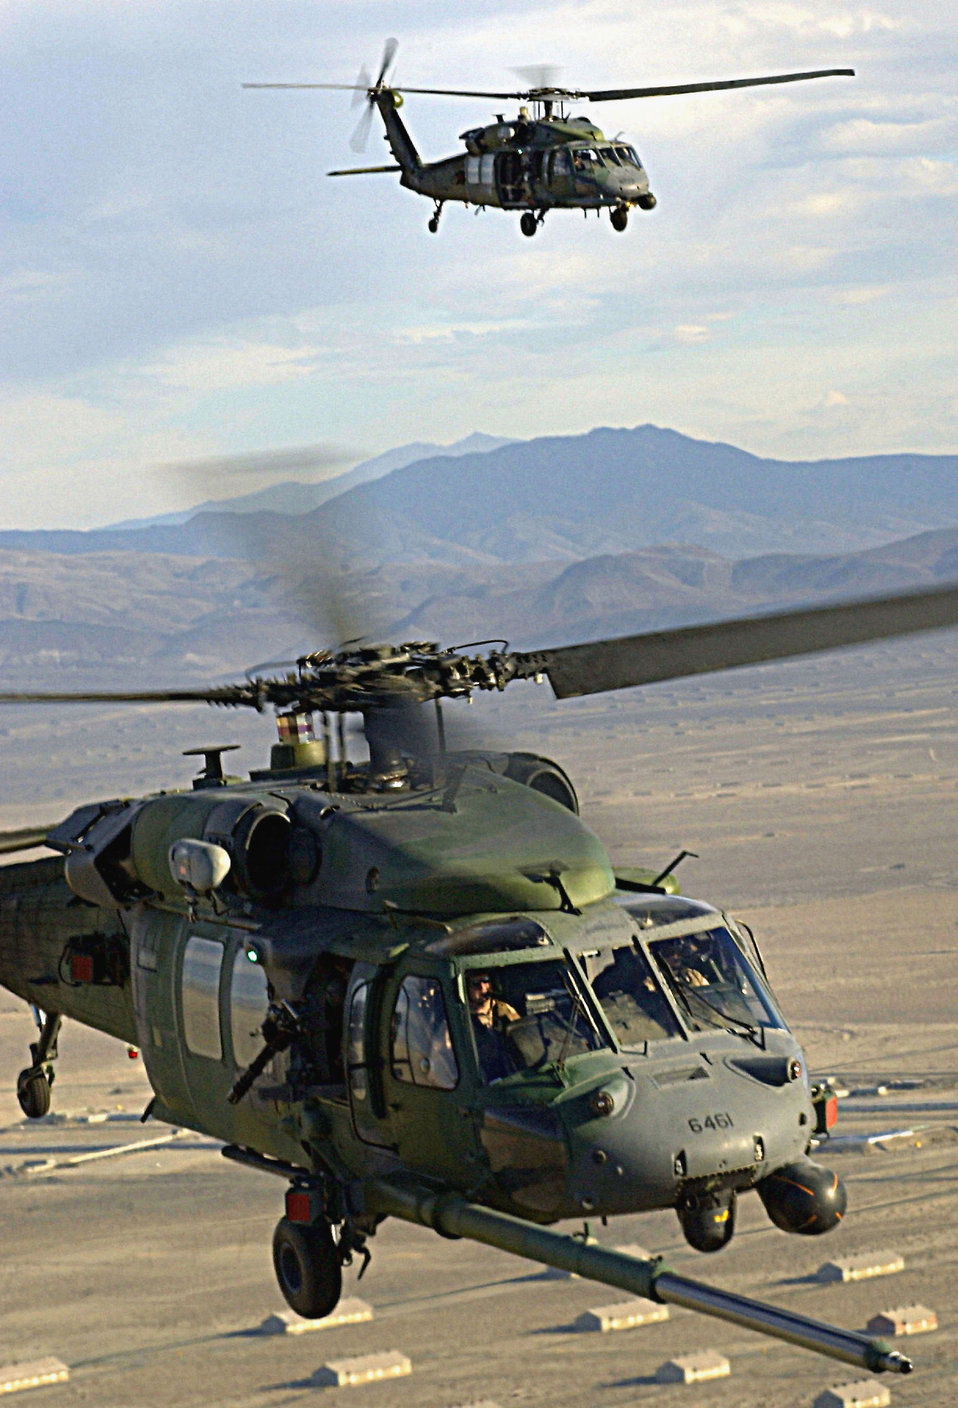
Pave-ing the way

NAVAL AIR STATION FALLON, Nev. -- HH-60G Pave Hawks fly here during Desert Rescue XI. The aircraft are from Moody Air Force Base, Ga. The joint-service combat search and rescue training exercise simulates rescuing aircrews behind enemy lines.